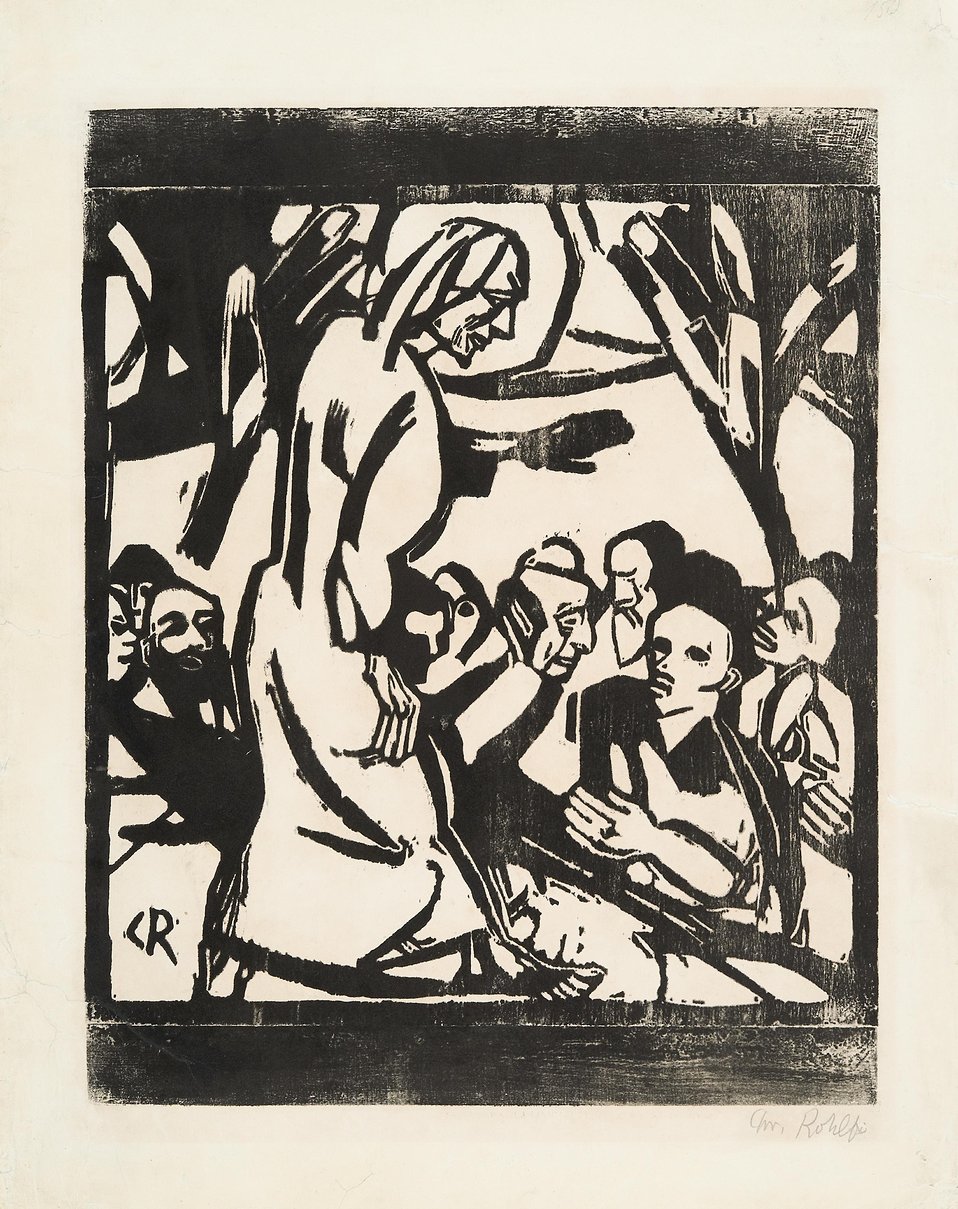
Bergpredigt. Holzschnitt auf Velin. 52 x 41 cm (65,5 x 51,5 cm). Signiert.